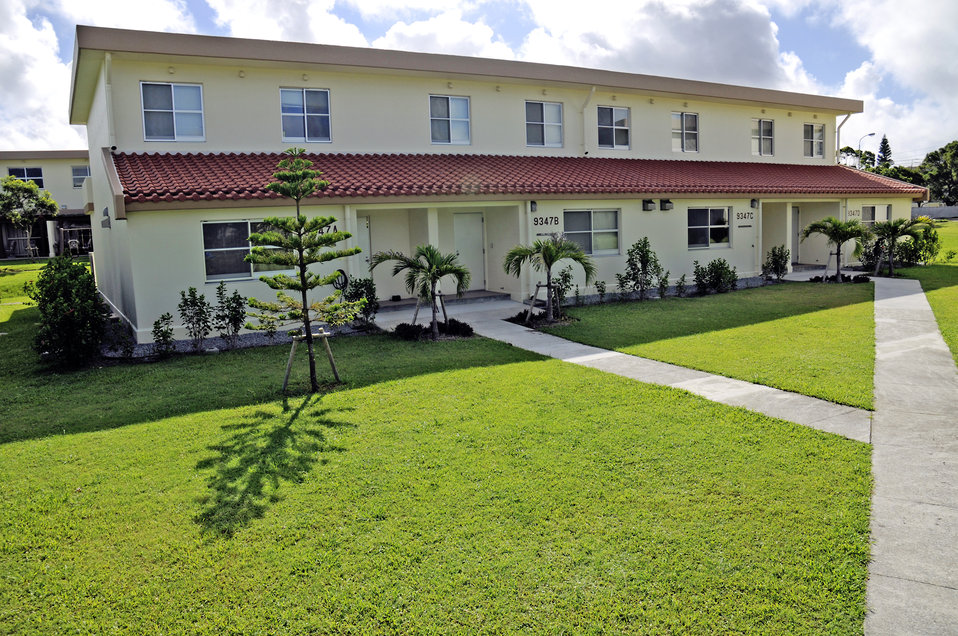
U.S. mandates base housing for military families at Okinawa

Military family housing on Kadena Air Base, Japan, will become mandatory for accompanied Airmen Aug. 1.